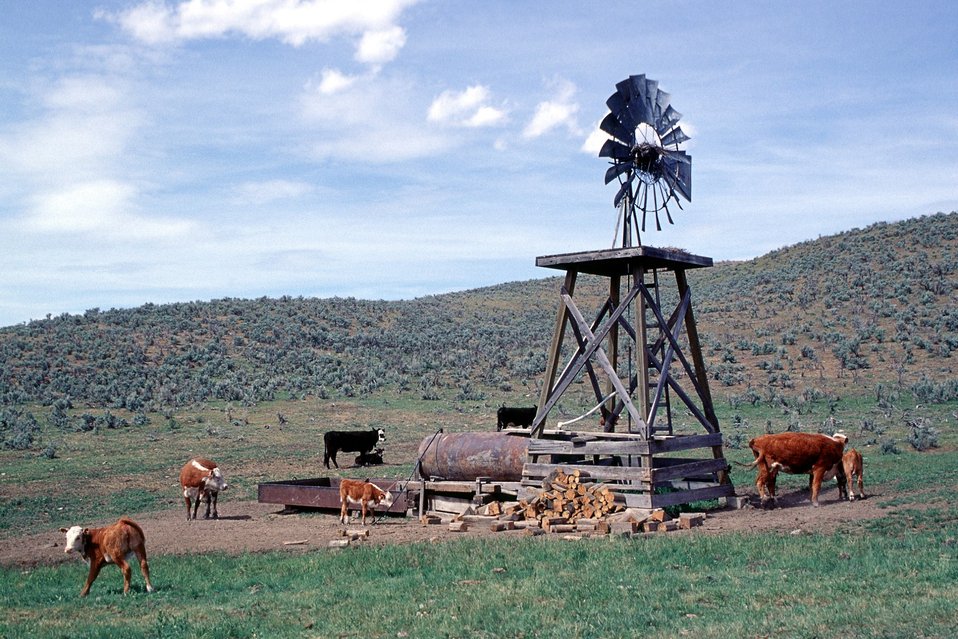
Immigrant Flats, Baker City RA. Old wind mill and cattle.